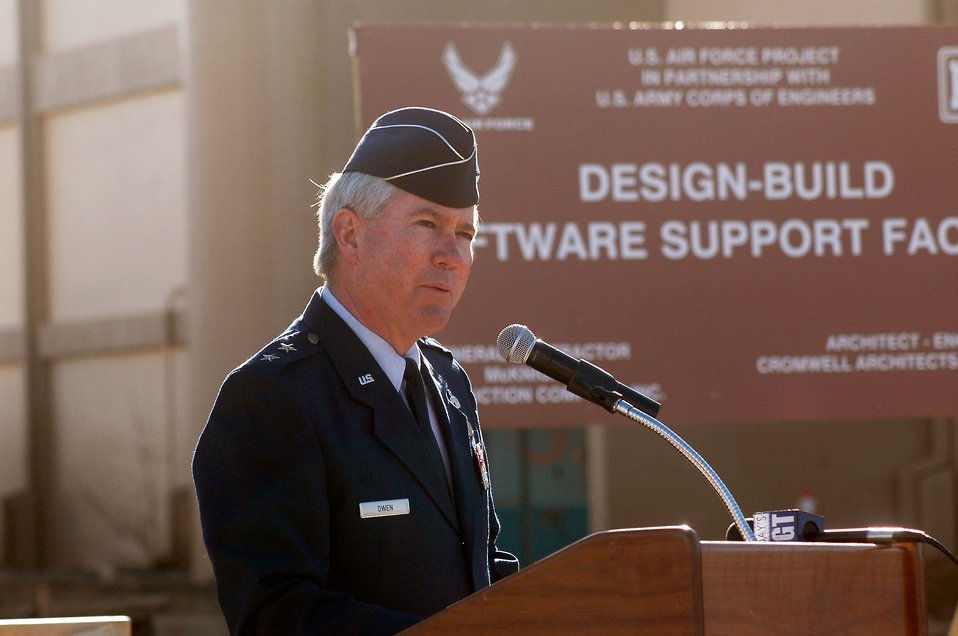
$21 million software facility project under way at Robins AFB

Maj. Gen. Thomas J. Owen speaks at the groundbreaking ceremony for the new, $21 million software support facility Feb. 19 at Robins Air Force Base, Ga. General Owen is the Warner Robins Air Logistics Center commander.